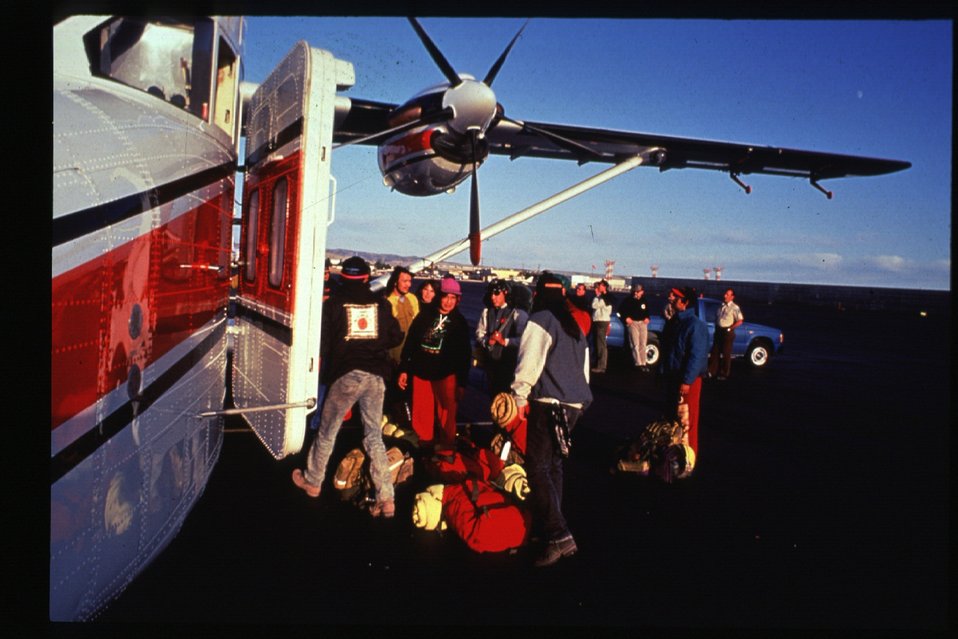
Boise Foothills Fire Danskin Mountains and South Fork of Boise River Wild Fire Fighters Four River Field Office LSRD Lower Snake River District